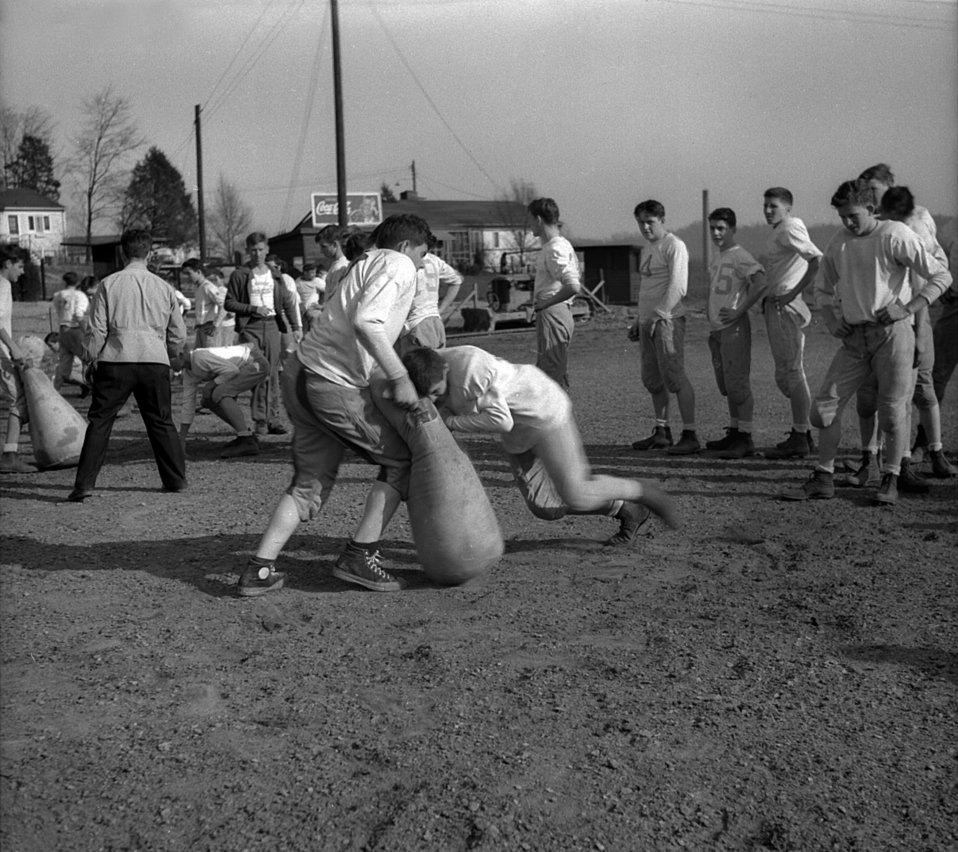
High School Football Spring Practice 2

4380 DOE photo by L. P. Stokes
Oak Ridge Tennessee 3-10-1948